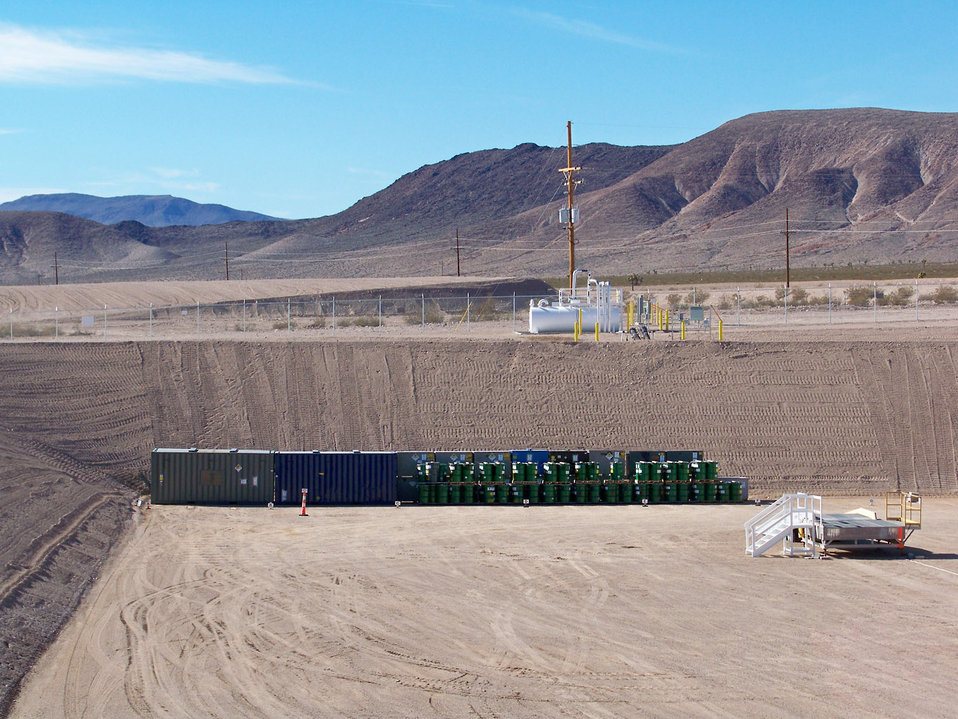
Nevada disposal unit

Crews completed the construction of a mixed waste disposal unit at Area 5 Radioactive Waste Management Site at the NNSS. The opening of the Resource Conservation and Recovery Act-permitted facility benefits waste generators at the NNSS and throughout the DOE complex seeking permanent disposal for their mixed waste, much of which was generated through environmental cleanup activities. This photo shows the Mixed Waste Disposal Unit 18.